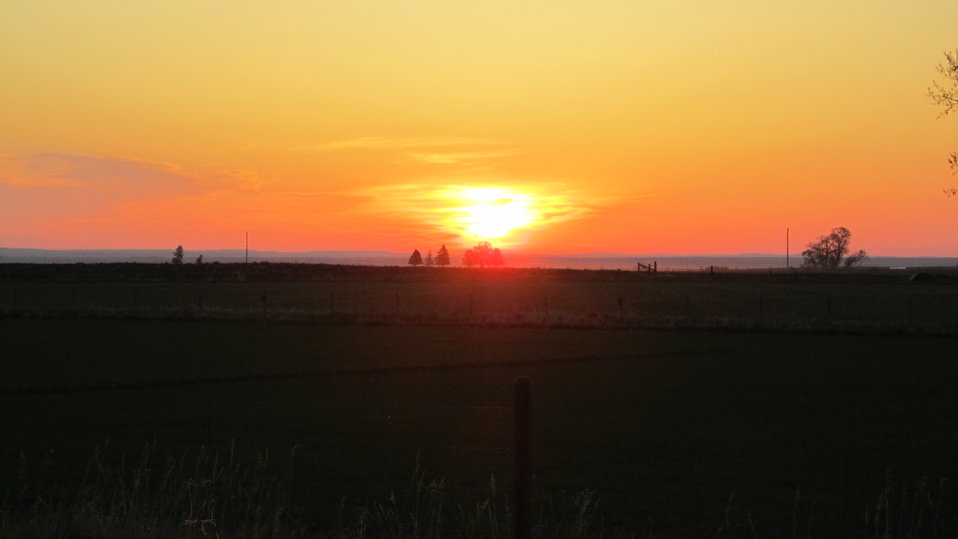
Sunrise On The Refuge

We get some amazing sunrises at the Refuge. You can see why Montana is nicknamed 'Big Sky Country!'